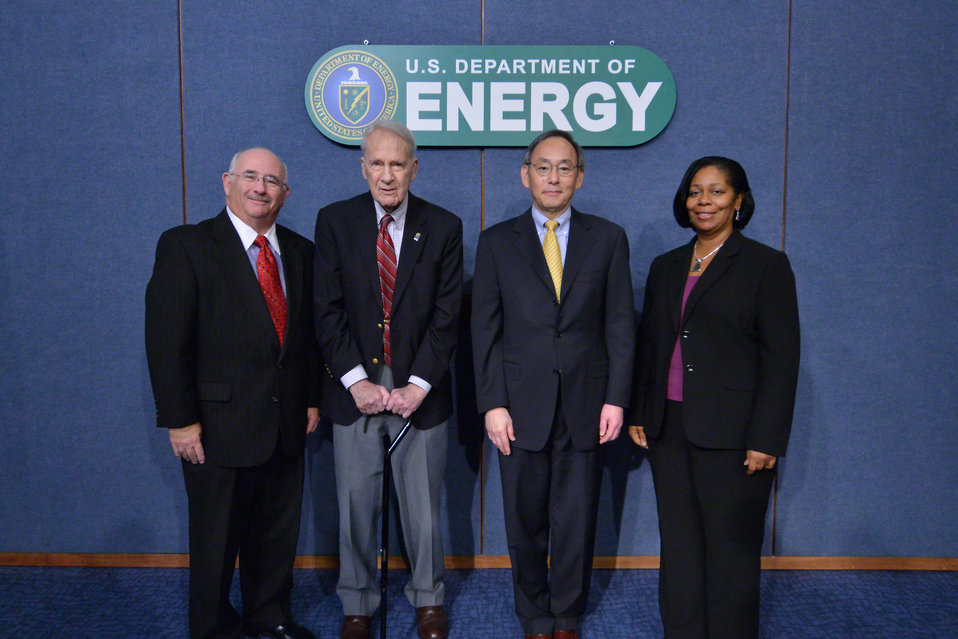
1 LM

Charter employees from the Office of Legacy Management with Secretary Steven Chu, current Secretary of Energy, and Secretary James Schlesinger, first Secretary of Energy.